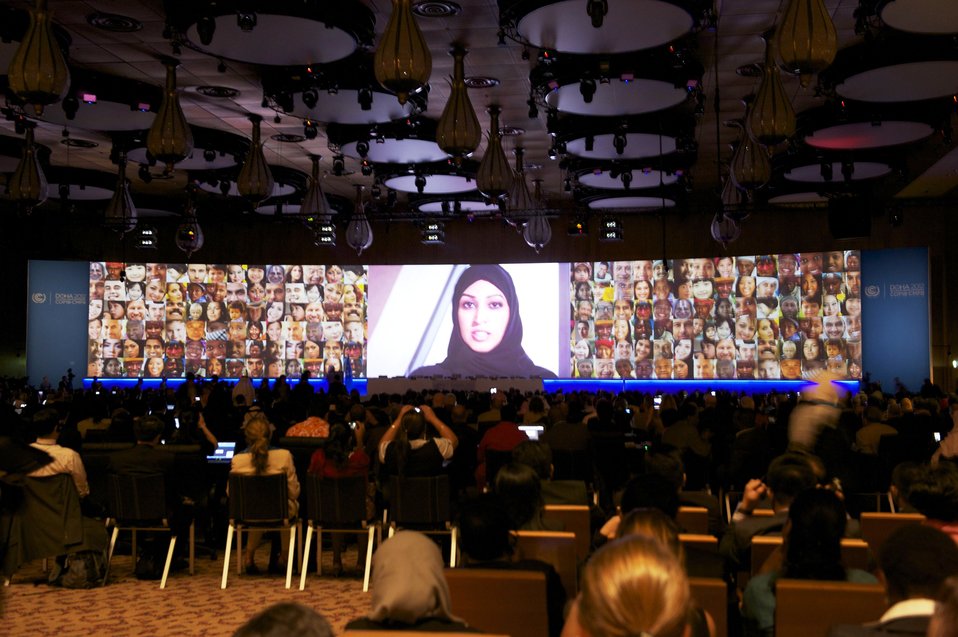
Visitors View a Film at the U.S. Center

Visitors view a film to learn more about U.S. climate actions at the U.S. Center at the 18th Session of the Conference of the Parties to the UN Framework Convention on Climate Change (COP-18) in Doha, Qatar, November 26, 2012.